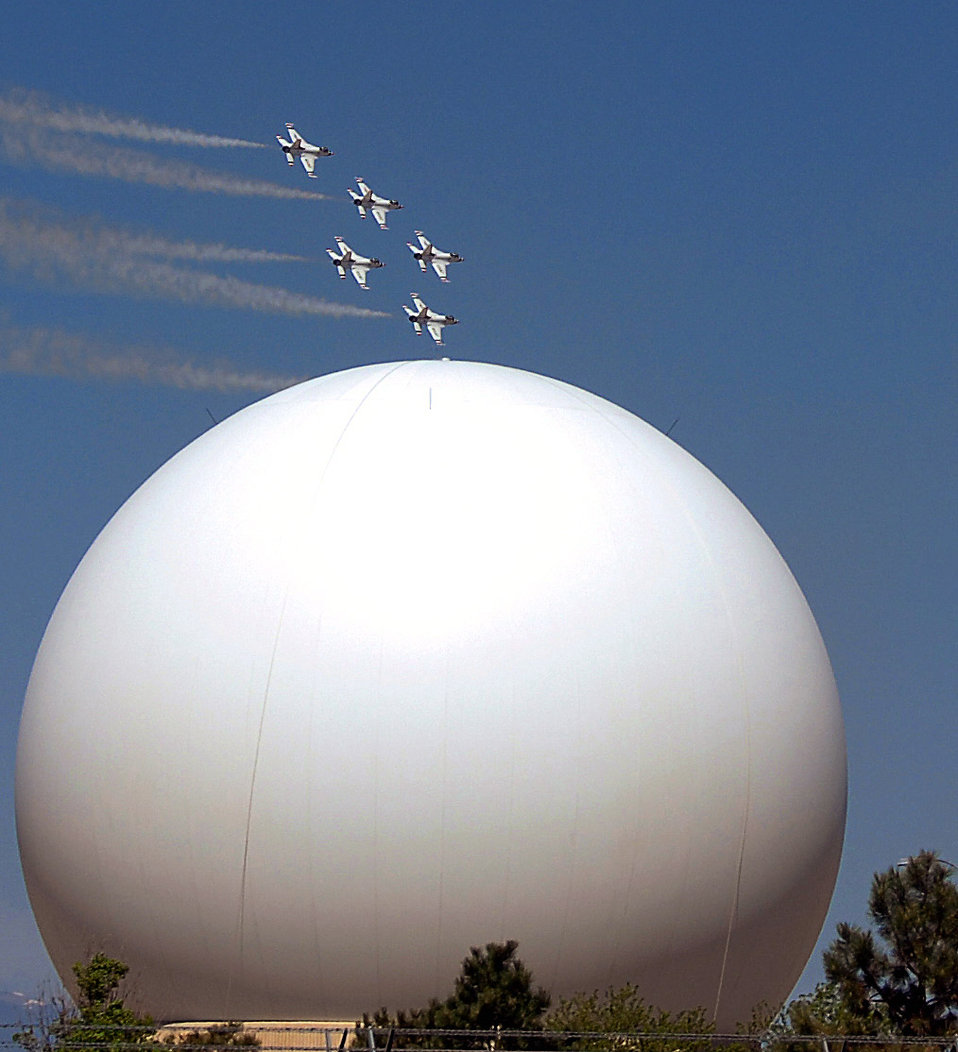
Airpower meets space power

The U.S. Air Force Thunderbirds fly over Schriever Air Force Base, Colo., May 25 as they prepare for an aerial demonstration at the U.S. Air Force Academy graduation May 28. In the foreground is one of two Air Force Satellite Control Network radomes at the Colorado Tracking Station at Schriever AFB.